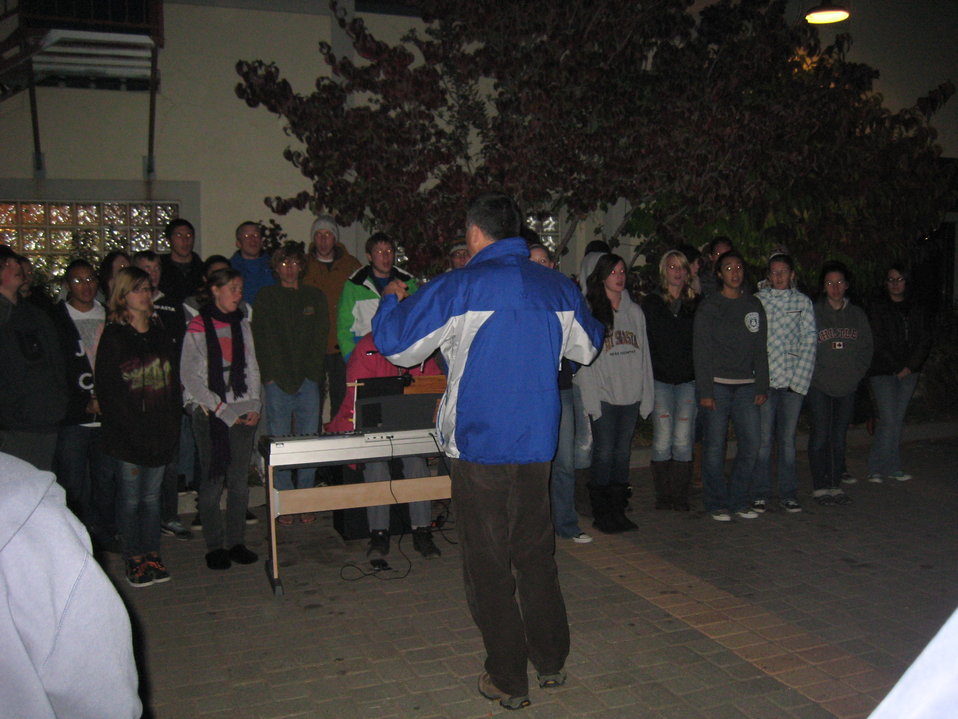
Siskiyou County Drug Facts Week Event

Speakers at the Mt. Shasta Memorial event did a share their stories with participants and weave in drug facts.